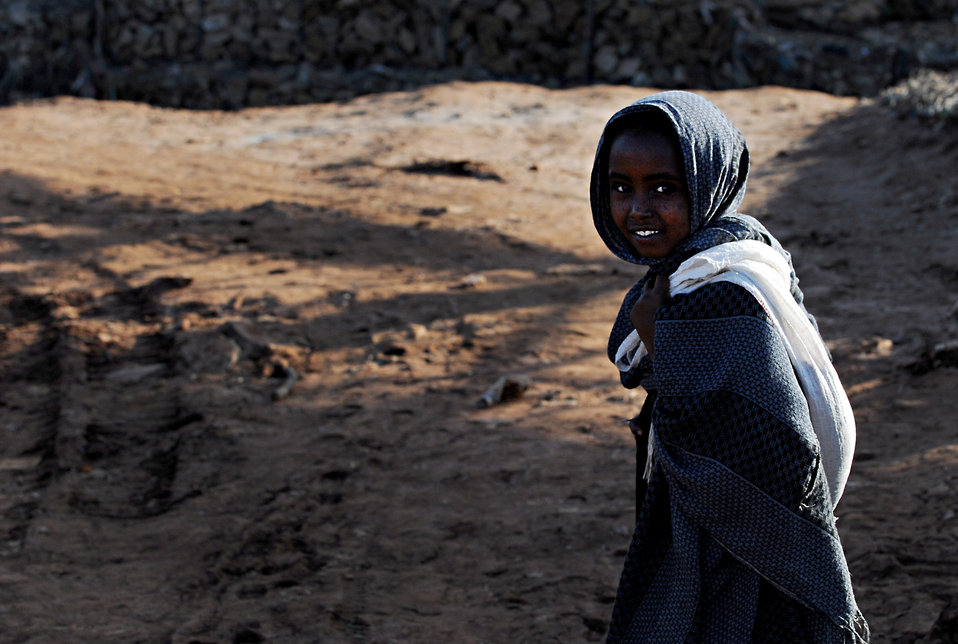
144 hours in Ethiopia: Into the Land of Plenty

A young girl pauses and smiles as she walks toward the original river crossing in Negele Borena, Ethiopia, Dec. 5, 2011. U.S. Navy sailors from Naval Mobile Construction Battalion 5 recently completed a bridge for pedestrians and livestock, which will prevent people from fording through the river to cross it.